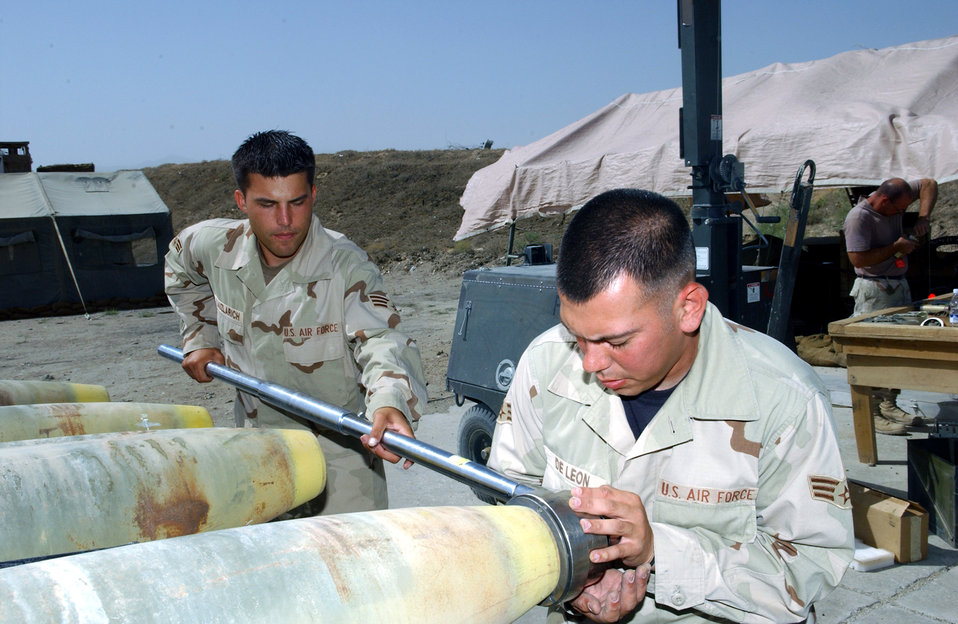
Giving Warthog its lethal bite

BAGRAM AIR BASE, Afghanistan -- Senior Airmen Kenneth Kauzlaurich (left) and Luis Deleon torque down the guidance system mounting assembly on the front of a 500-pound laser guided bomb. The 6-foot wrench allows the pair to put 600 pounds of torque on the assembly. The Airmen are assigned to the 455th Expeditionary Aircraft Maintenance Squadron and are deployed from Eielson Air Force Base, Alaska.